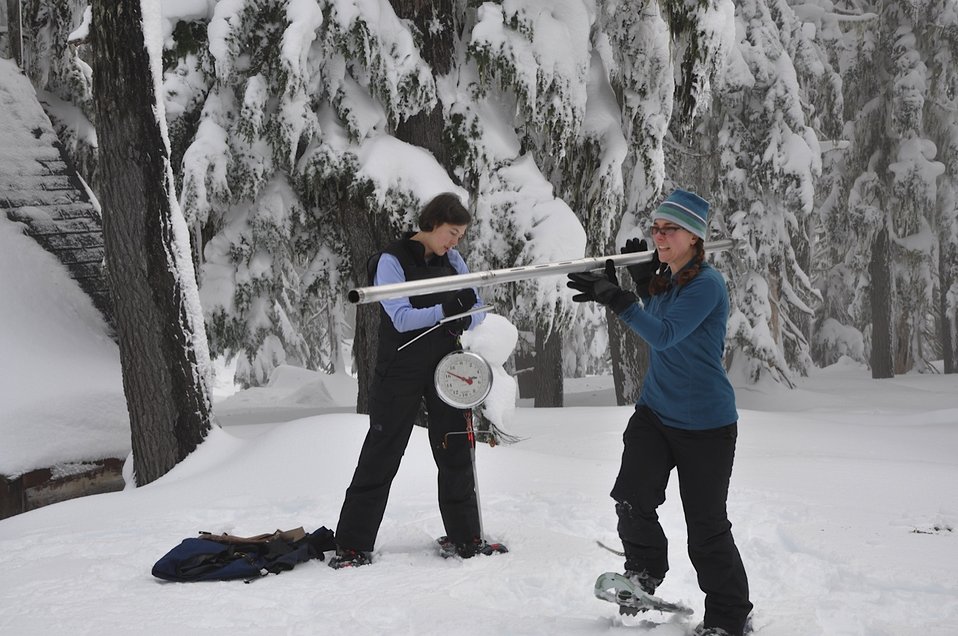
Snow Survey 2

U.S. Department of Agriculture (USDA) Natural Resource Conservation Service (NRCS) Oregon hydrologists Melissa Webb and Julie Koeberle measure snow on Mount Hood, OR.